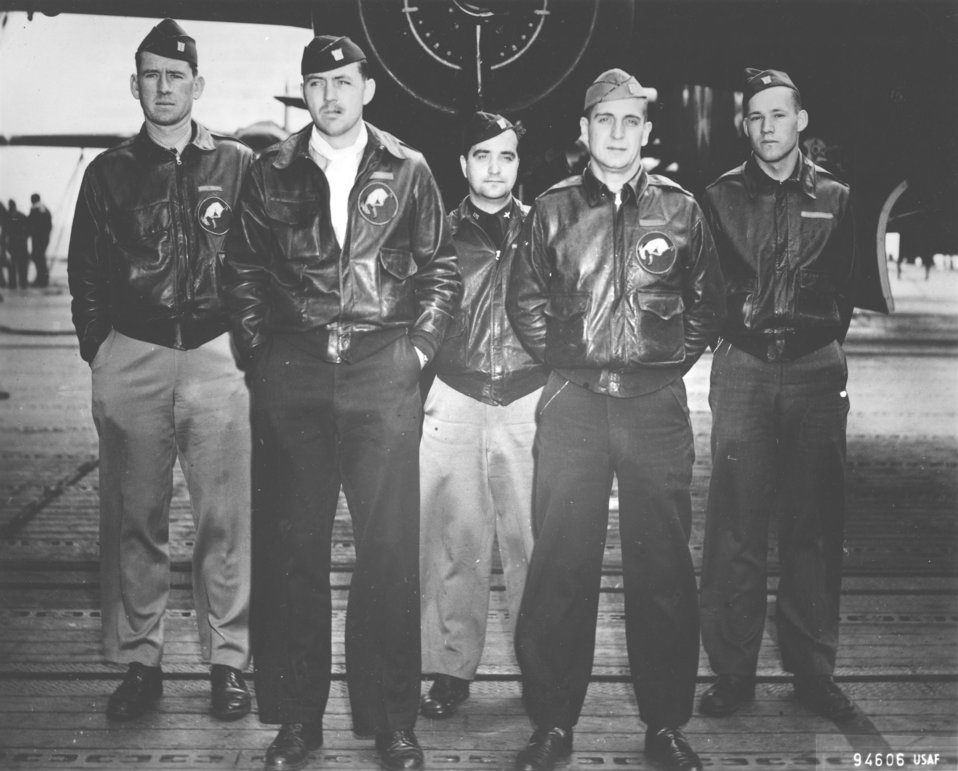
Doolittle Tokyo Raiders, Crew No. 7

Crew No. 7 (Plane #40-2261, target Tokyo): 95th Bombardment Squadron, front row: Lt. Ted W. Lawson, pilot; and Lt. Dean Davenport, copilot; back row: Lt. Charles L. McClure, navigator; Lt. Robert S. Clever, bombardier; and Sgt. David J. Thatcher, flight engineer/gunner.